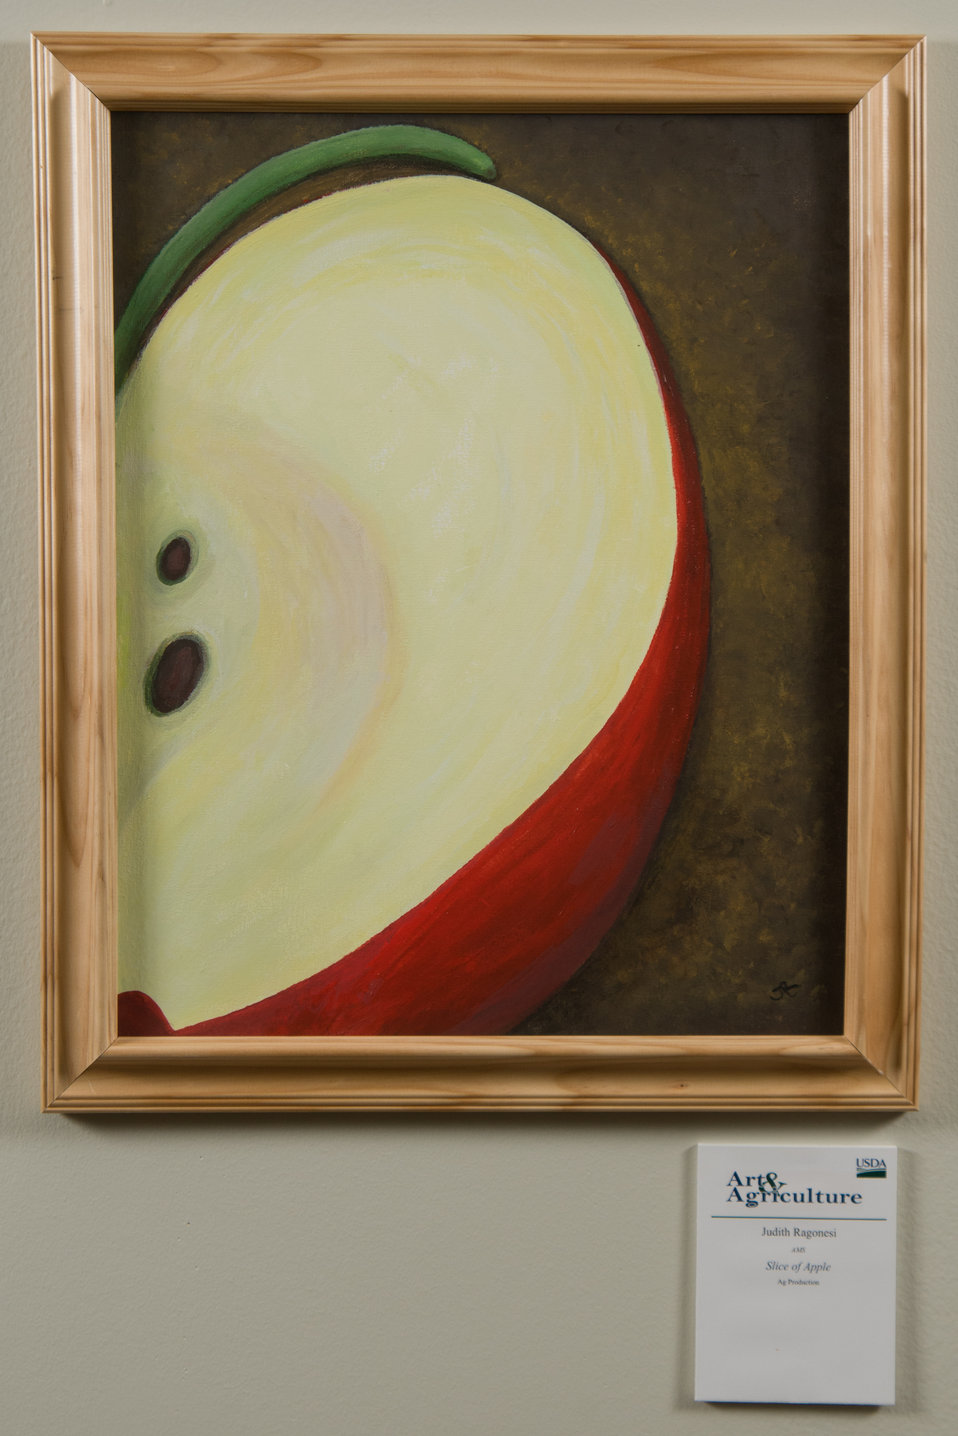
Online Viewer's Choice entries of the 2013 Art & Agriculture, Tuesday, July 9, 2013, in the South Building, Washington, D.C. Themes were expressed by employees from across the department and the contest was open to full-time and part-time USDA employees. Winning artwork will be displayed till the end of the year. U.S. Artistic expression is a creative outlet that is vital for an individual to grow and develop.